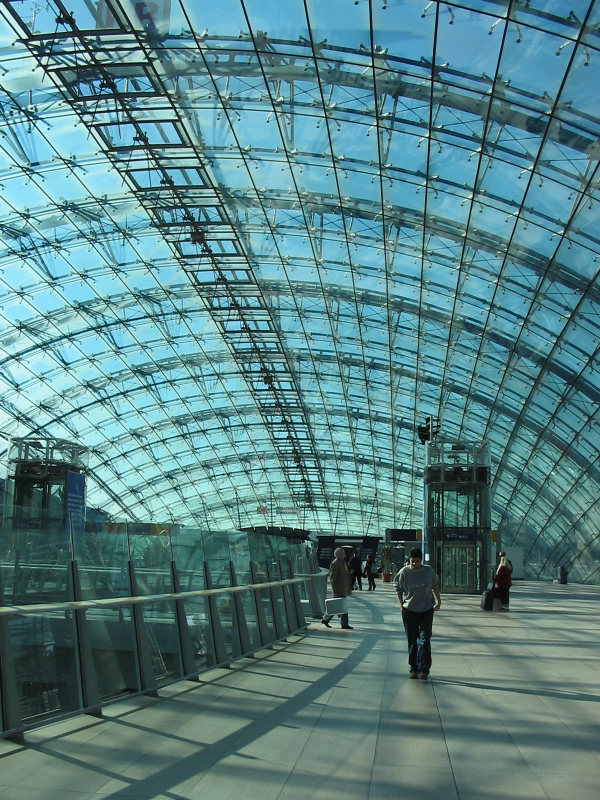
Frankfurt (Main) Flughafen Fernbahnhof, Bahnhofshalle.